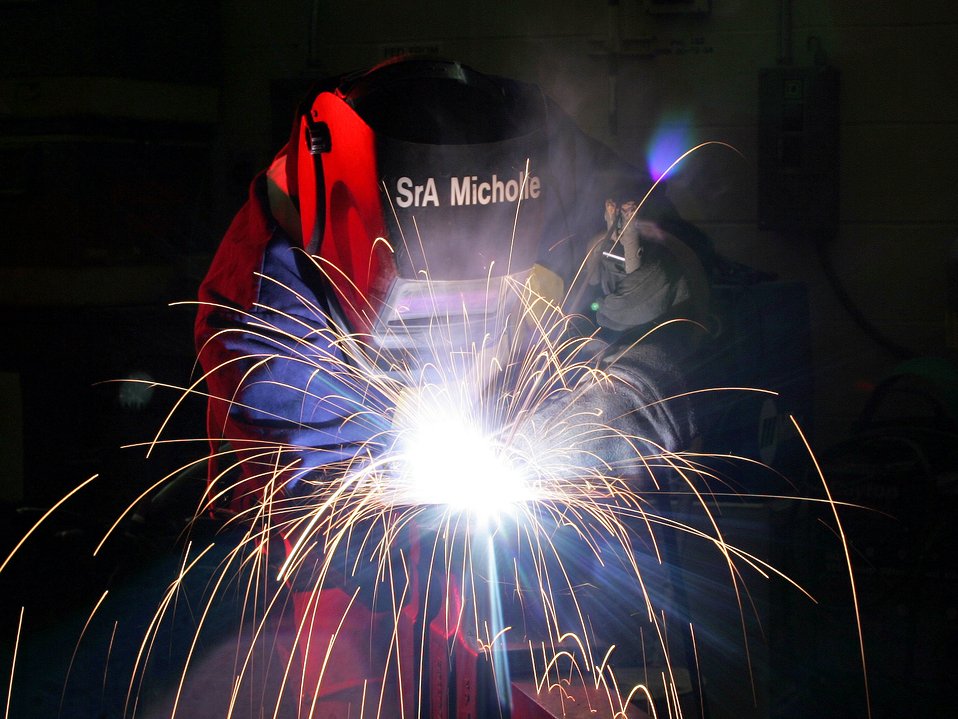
Sparks fly

LACKLAND AIR FORCE BASE, Texas (AFPN) -- Senior Airman Frank Micholle welds a T-joint for a military working dog shelter. Airman Micholle is a structural craftsman with the 37th Civil Engineer Squadron.